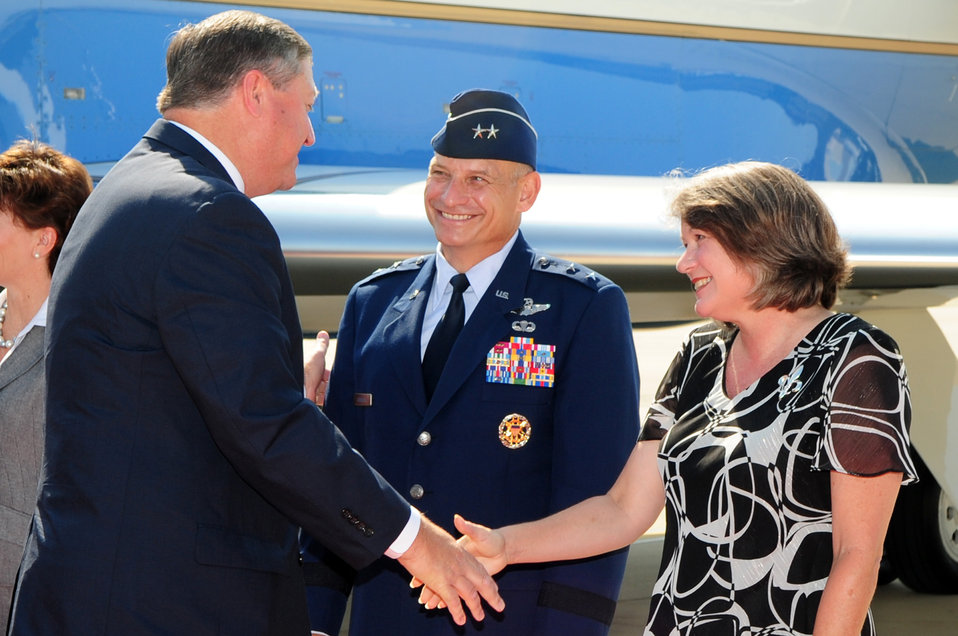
Air Force Global Strike Command activated

Air Force Global Strike Command Vice Commander Maj. Gen. James Kowalski, and his wife, Julie, welcome Secretary of the Air Force Michael B. Donley to Barksdale Air Force Base, La., for the activation ceremony of AFGSC Aug. 7.